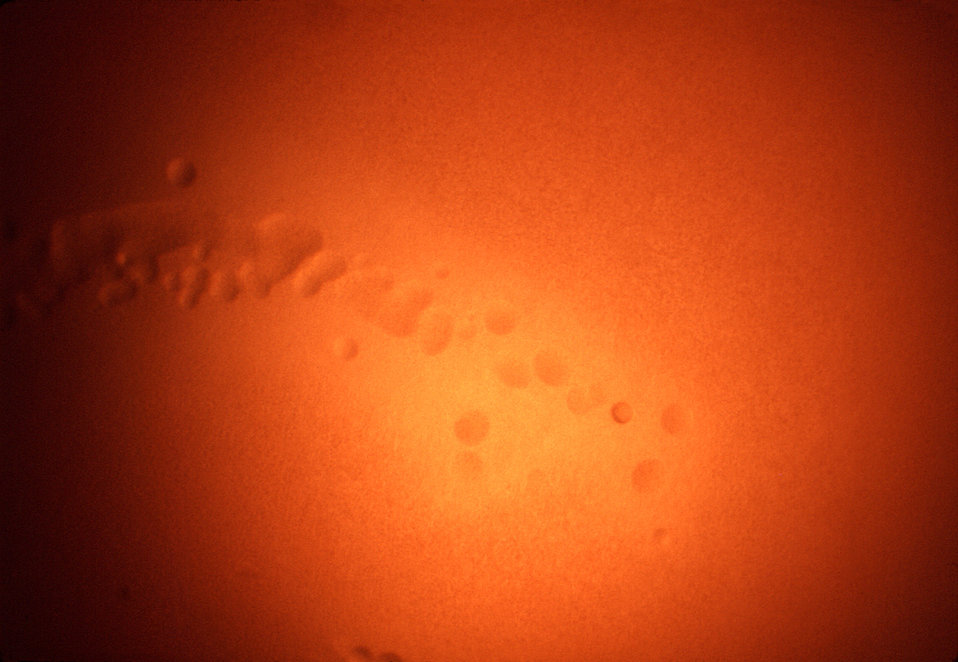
Magnified 100x, this 1977 photograph depicted a Petri dish filled with heart infusion agar medium containing 5% defibrinated rabbit blood, i.e., blood agar plate (BAP). After having been inoculated with a culture of Streptococcus anginosus bacteria, of the Gram-positive viridans group of streptococci (VGS), the BAP was incubated in a carbon dioxide enriched atmosphere at 35oC for 24 hours. In this view, one can see numbers of growing "surface" colonies surrounded by what is known as "wide zone alpha hemolytic" (WZα) color changes. Characteristics of WZα reactivity are described as, "the area immediately adjacent to the colony has some red blood cells (RBCs), but an area outside of that may be completely, or nearly completely, cleared of RBCs. Therefore, there is no reactive zones where "complete" RBC hemolysis has occurred, as is the case in beta-hemolytic reactions, hence the Wide Zone "alpha" terminology.